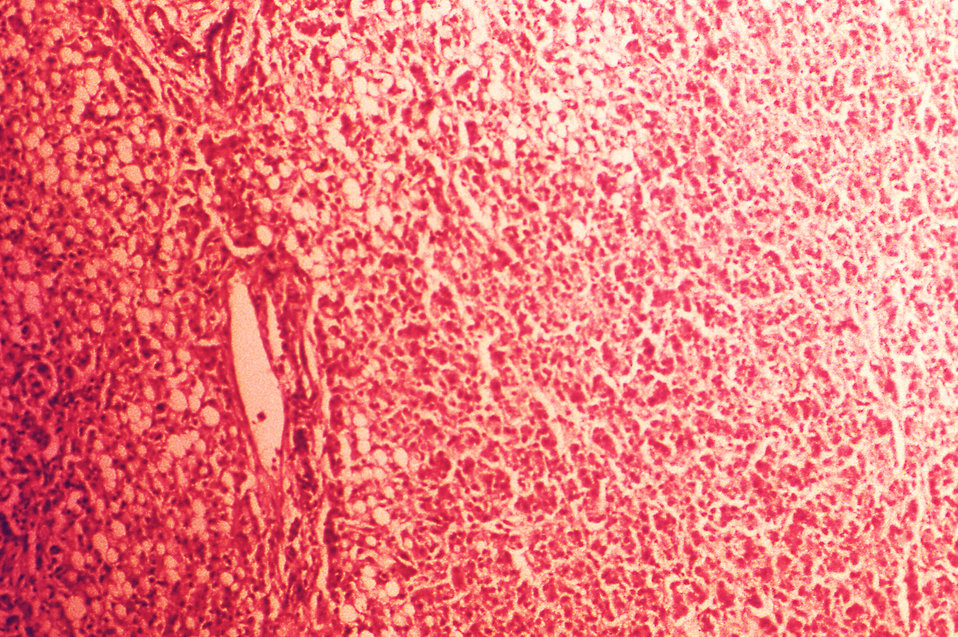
Under a magnification of 100X, this hematoxylin-eosin-stained (H&E) photomicrograph depicts the cytoarchitectural changes found in a liver tissue specimen extracted from a malnourished individual who had developed Kwashiorkor. This particular slide reveals 'microvacuolar steatosis, i.e., fatty degeneration, in the periportal region.'